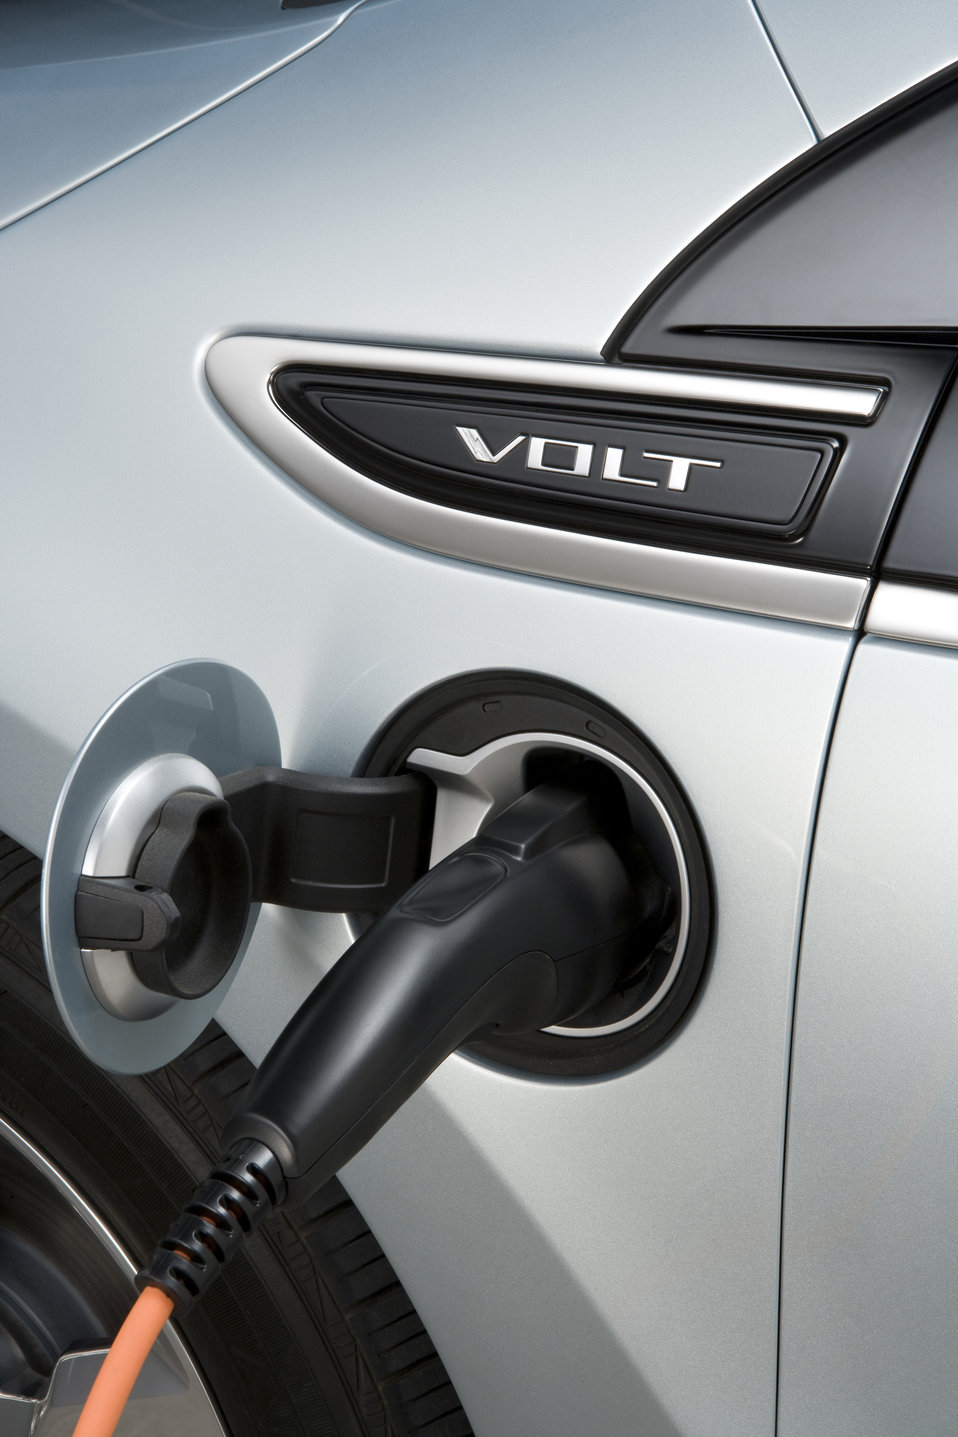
Shown is a close-up of the 2011 chevrolet volt plugged in to charge its battery.